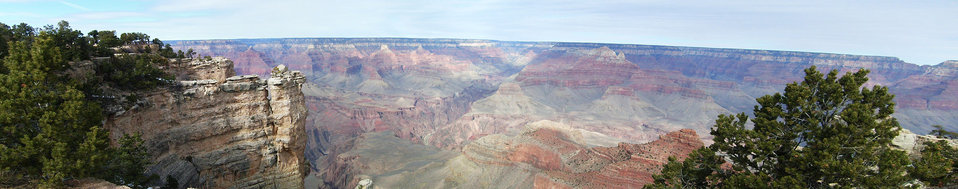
South rim grand canyon arizona, usa

Panorama from the south rim of the grand canyon, arizona, usa. only brightness and contrast was changed to remove the hazy day look in the original picture..